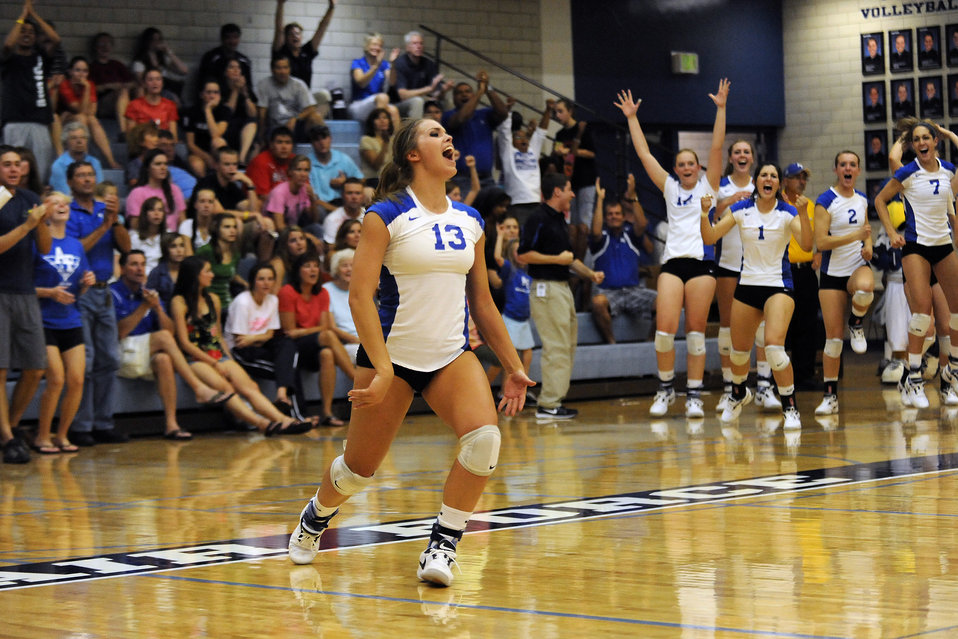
Cadet's show promise during women's volleyball tournament

Caroline Kurtz celebrates the Falcons' winning their season opener against Long Island College Aug.27, 2010, at the U.S. Air Force Academy in Colorado Springs, Colo. Kurtz contributed 20 kills during the match, leading the Falcons. The Falcons won 3-2 over Long Island with scores of 25-14, 22-25, 29-31, 25-19 and 15-9.